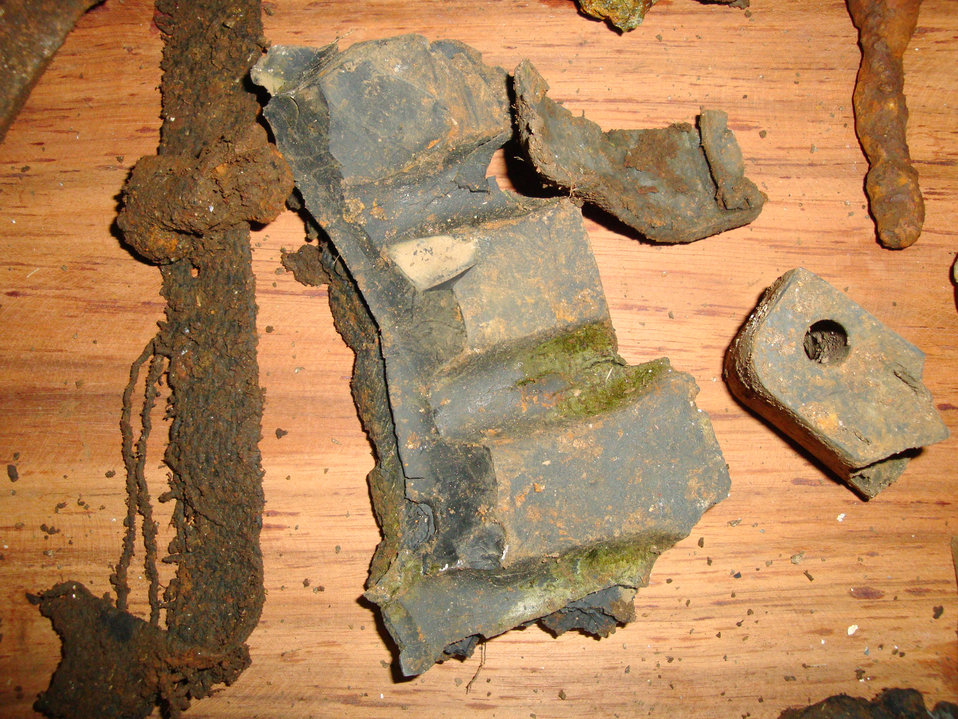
Sergeant travels to Philippines in search of MIA remains

Part of a World War II jeep's tire tread found April 6, 2010, in Tacloban, Philippines. During a Moore's Marauders mission to find six servicemembers designated as